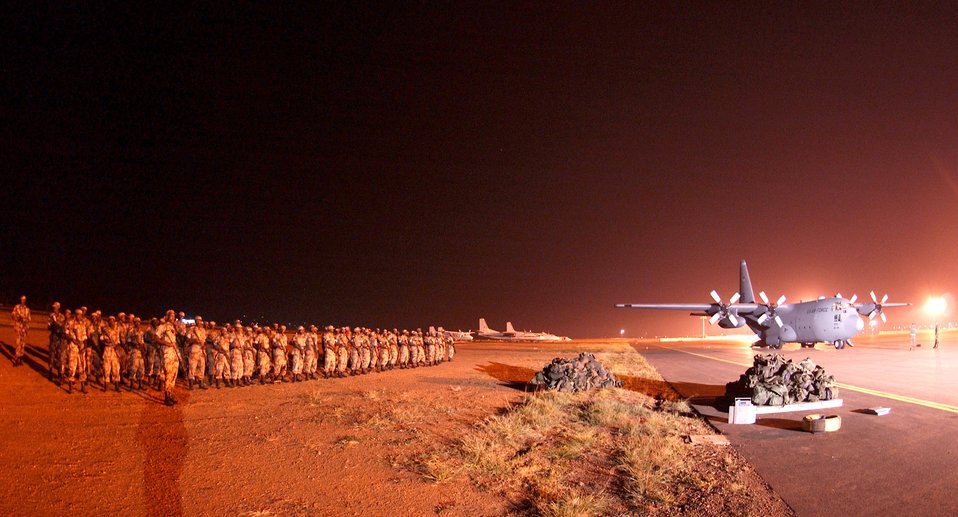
USAFE helps Rwandan troops deploy to Darfur

KIGALI INTERNATIONAL AIRPORT, Rwanda -- Rwandan forces stand by to board a C-130 Hercules from Ramstein Air Base, Germany, here July 19. The Ramstein Airmen were here to provide transportation for 1,200 Rwandan forces to Sudan in support of NATO's response for the African Union's expanded peacekeeping mission in Darfur with logistics and training.